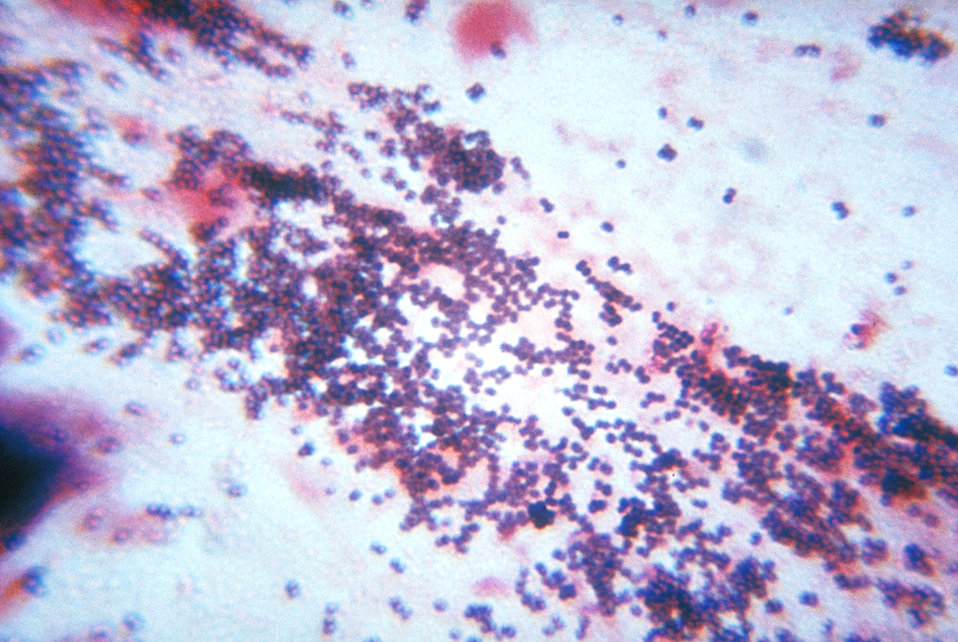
This sputum smear shows staphylococcus bacteria using Gram stain technique in a patient with staphylococcal pneumonia.